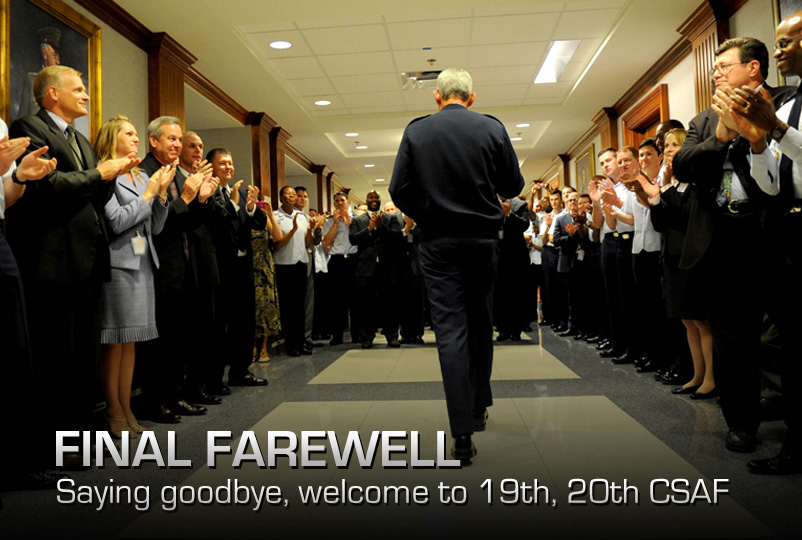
AF Chief of Staff

Gen. Norton Schwartz was surprised with applause from hundreds of Airmen lining the Pentagon hallway, Aug. 8, 2012, as he departed the building for the final time as the Air Force Chief of Staff. Schwartz will retire in a ceremony Friday, after serving 39 years in the Air Force, the last four years as the Air Force's senior uniformed leader.